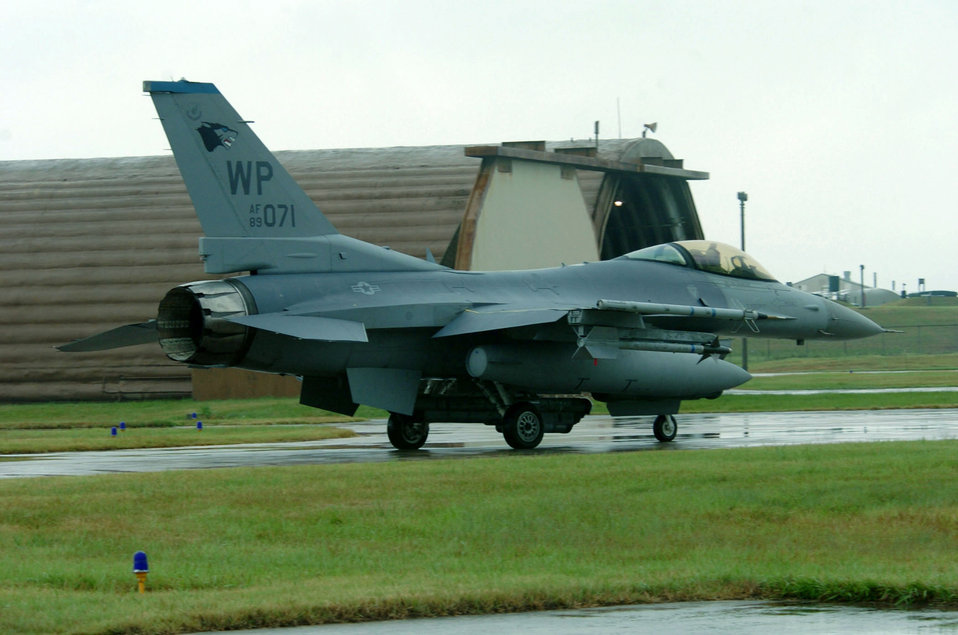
Kunsan provides strong foundation for F-16 pilots

KUNSAN AIR BASE, South Korea -- A 35th Fighter Squadron F-16 Fighting Falcon taxis out for a mission here. The aircraft is flown by the squadron's 1st Lt. John Wilson.